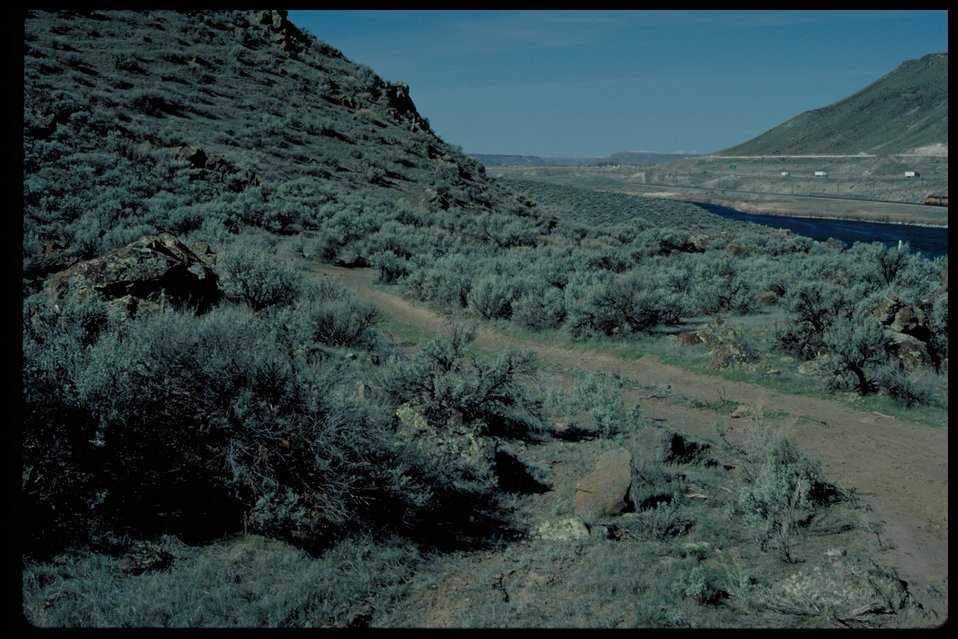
The Narrows Oregon Trail Lower Snake River District